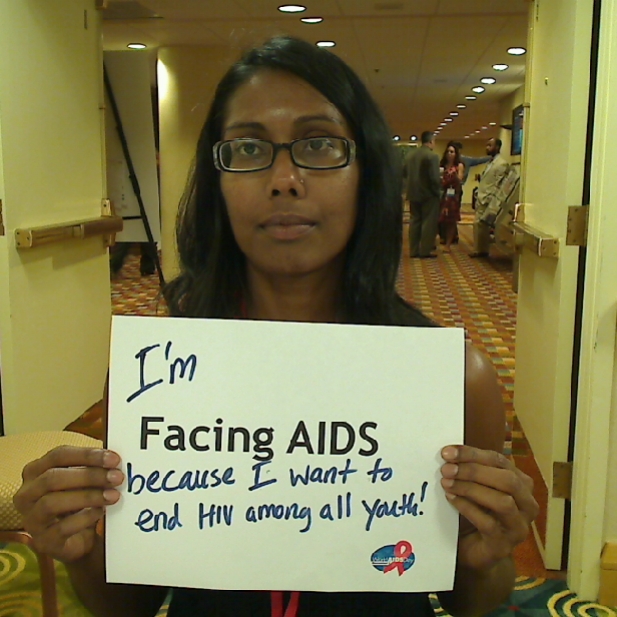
I'm Facing AIDS because I want to end HIV among all youth!